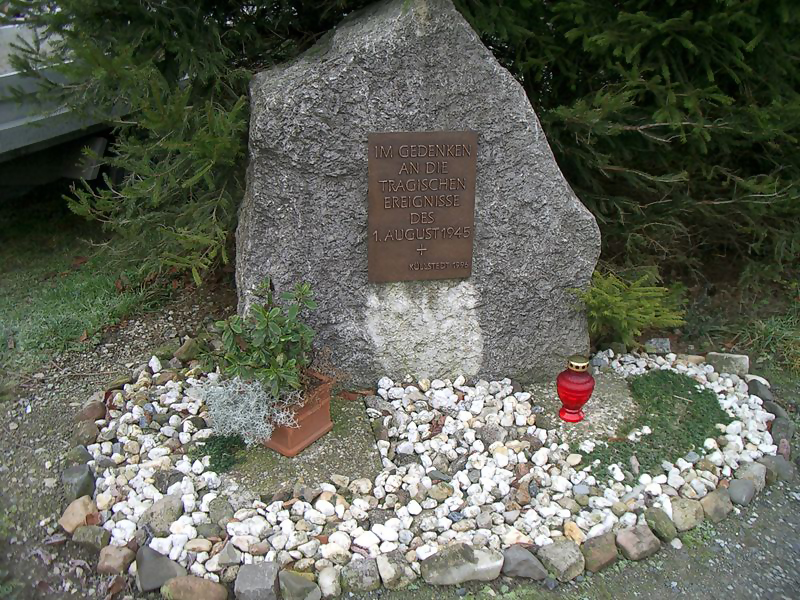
Deutsch: Gedenkstein für die im August 1945 vom NKWD erschossenen Küllstedter